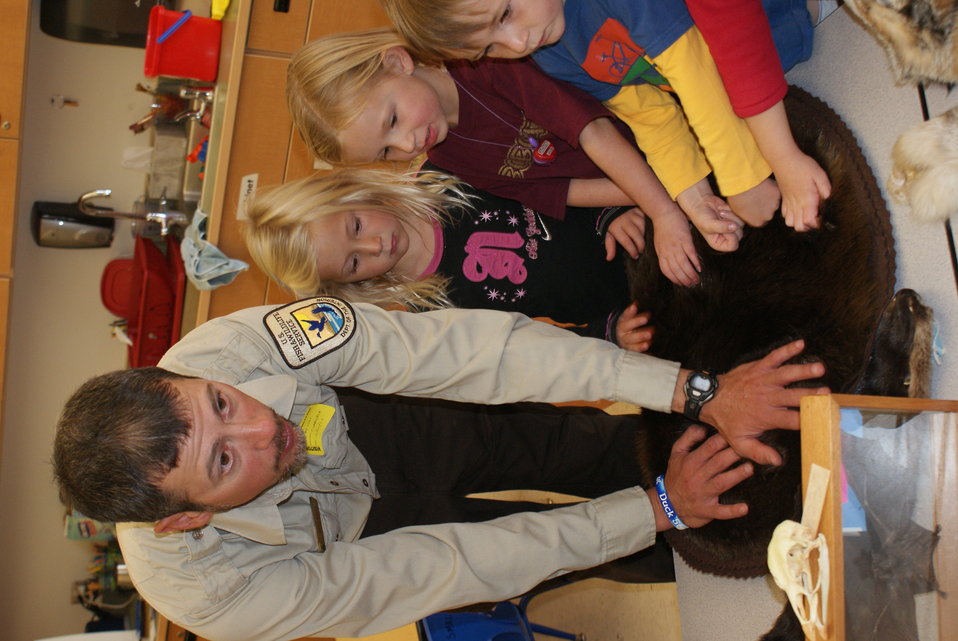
Scientists in the Community Program

U.S. Fish and Wildlife Service Mountain-Prairie Region Deputy ARD for External Affairs, Matt Kales, introduces early childhood education students at William Roberts Elementary School in Denver to some of Colorado's native and historic wildlife species.